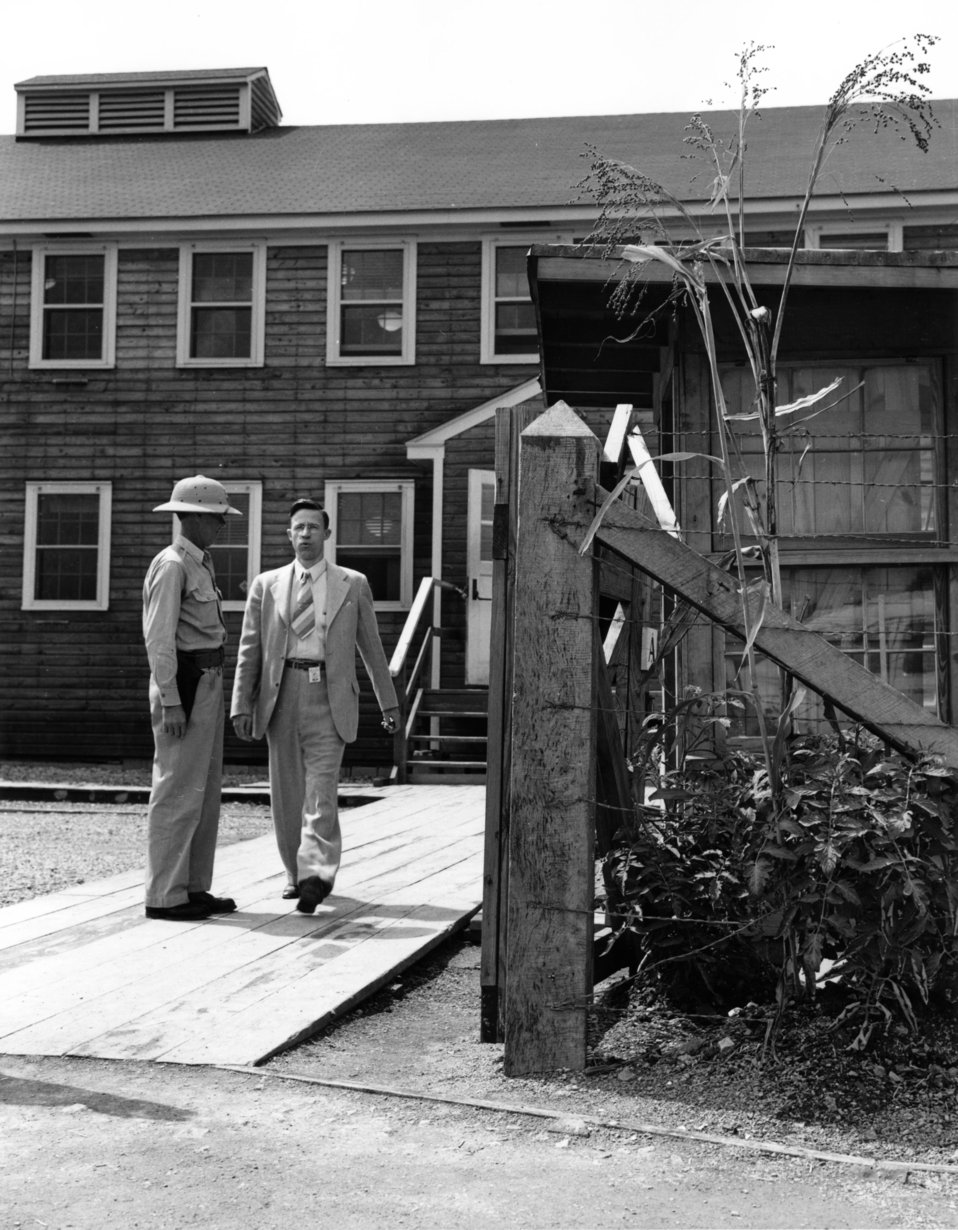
Daily Life at Oak Ridge